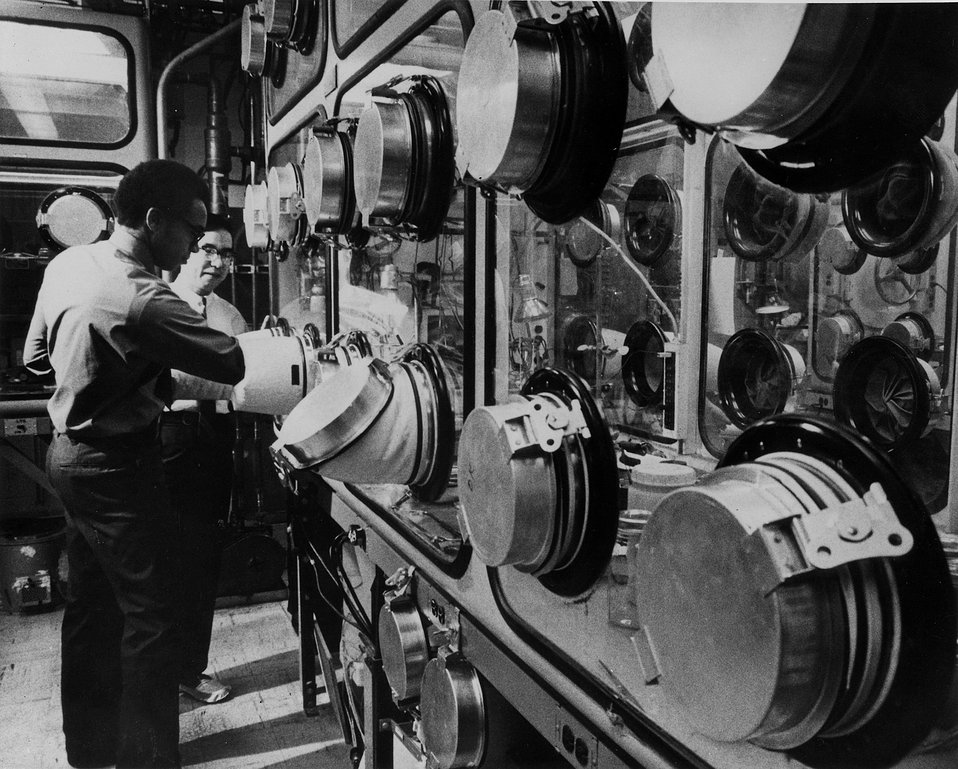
Dr. Eddie C Gay and Dr. Hiroshi Shimotake discuss the assembly of a Lithium Sulfur Storage Cell at the US AEC's Argonne Lab.
c.1972